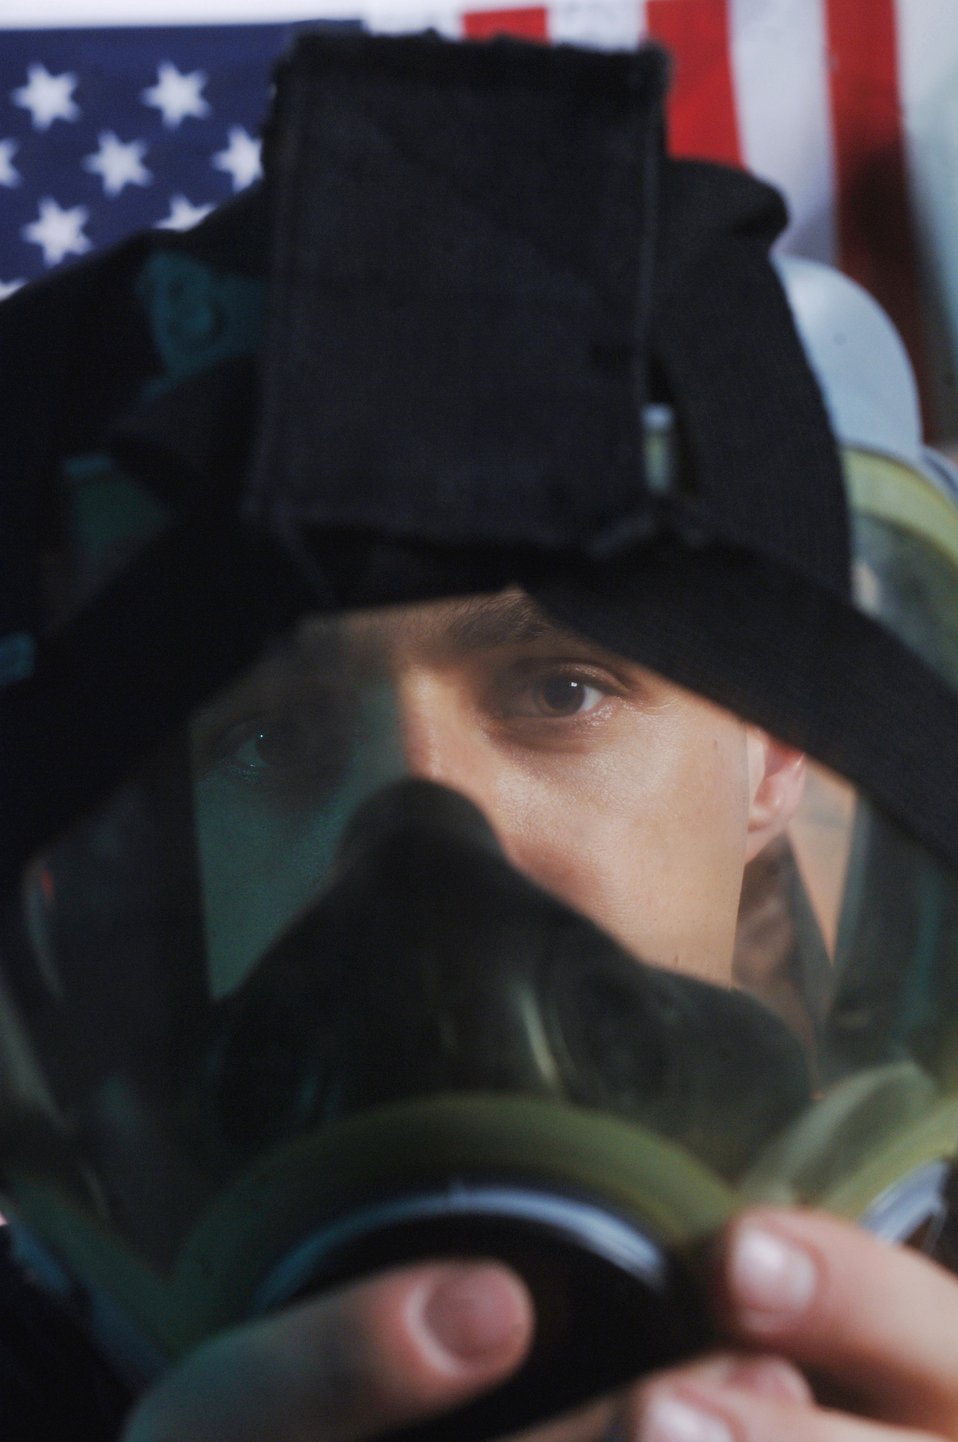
Mask inspection

Staff Sgt. Brian Fagan checks a gas mask for leaks, cracks or holes, ensuring that it's serviceable. Sergeant Fagan is a readiness technician with the 374th Civil Engineer Squadron at Yokota Air Base, Japan.